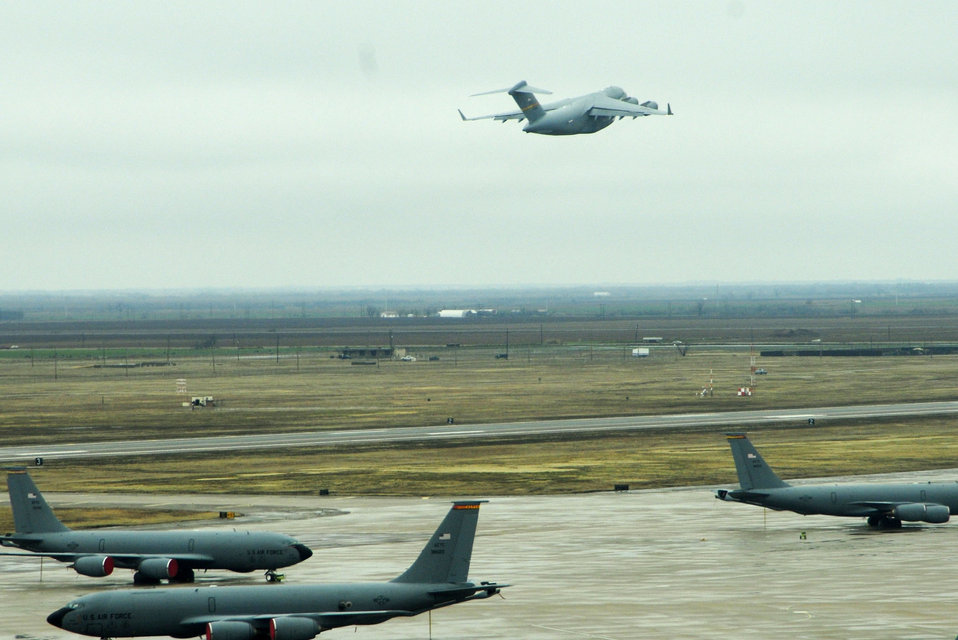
A C-17 Globemaster III takes off from Altus Air Force Base

A C-17 Globemaster III takes off Feb. 4, 2010, from Altus Air Force Base, Okla. The C-17 is relocating to Lackland AFB, Texas, to continue flight training for Altus AFB aircrews because of the severe ice storm that swept through Altus AFB Jan. 28.